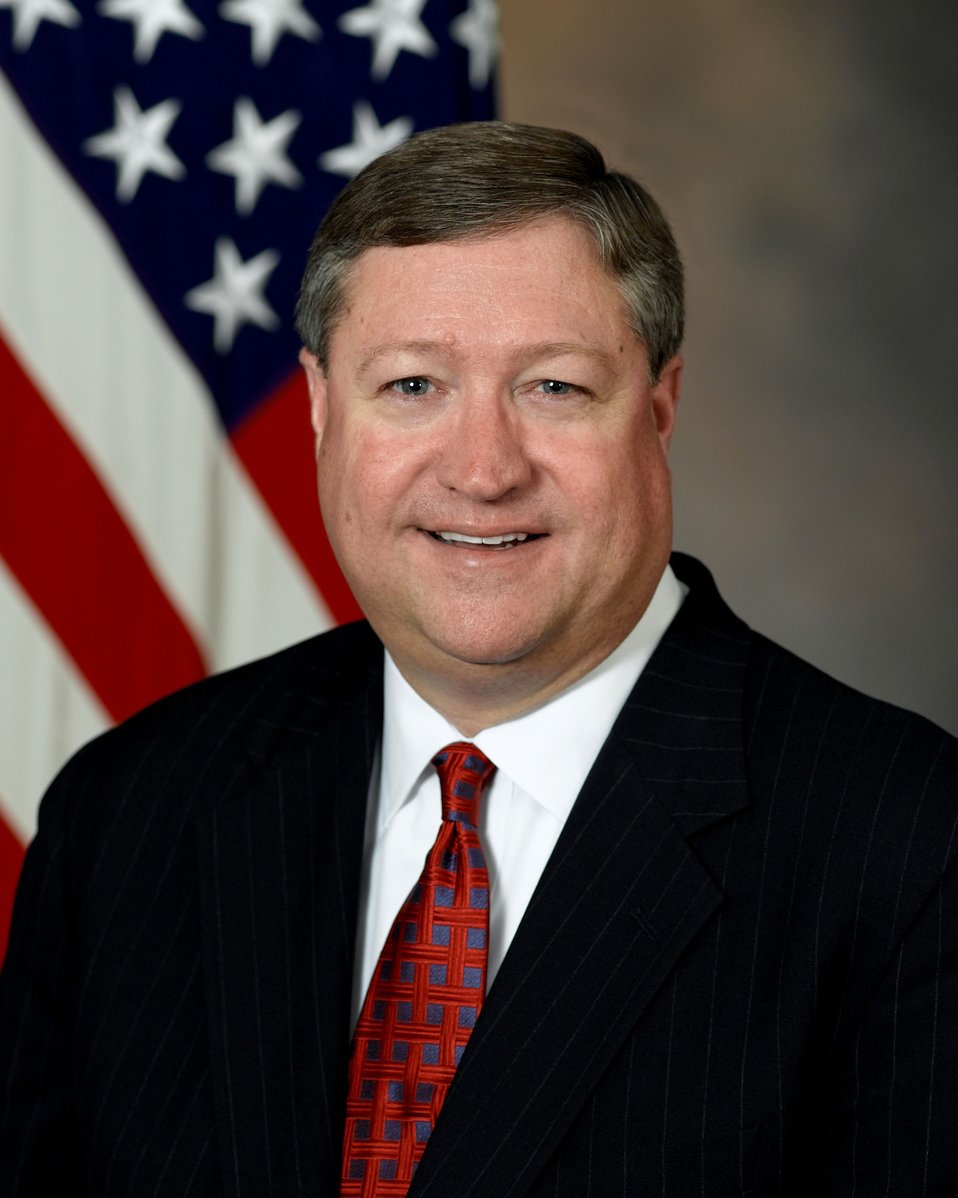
Secretary of the Air Force Michael B. Donley.